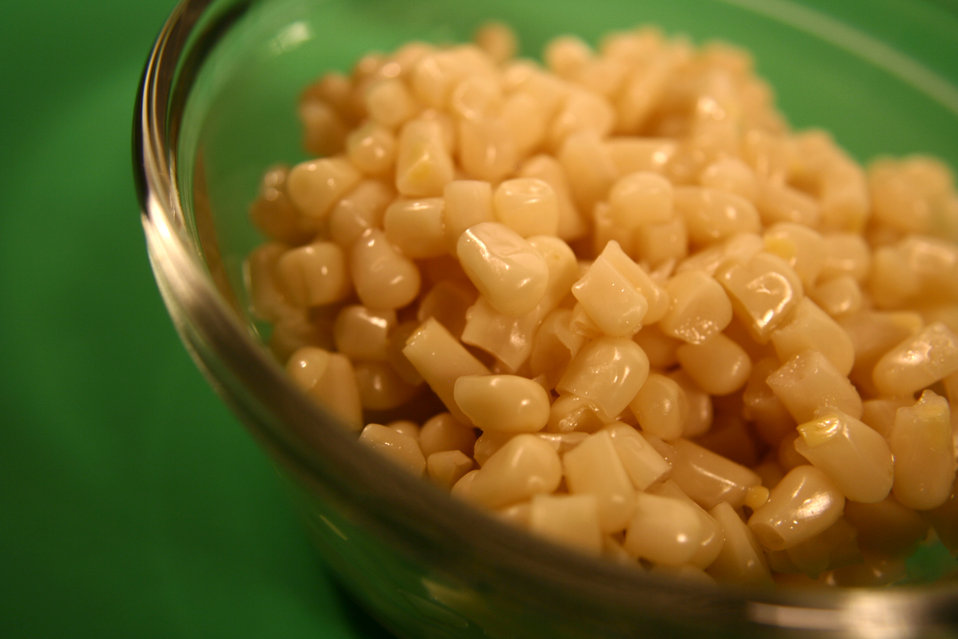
High in its vitamin C content, the cooked corn kernels contained in this small glass bowl, bore a bright yellow color.